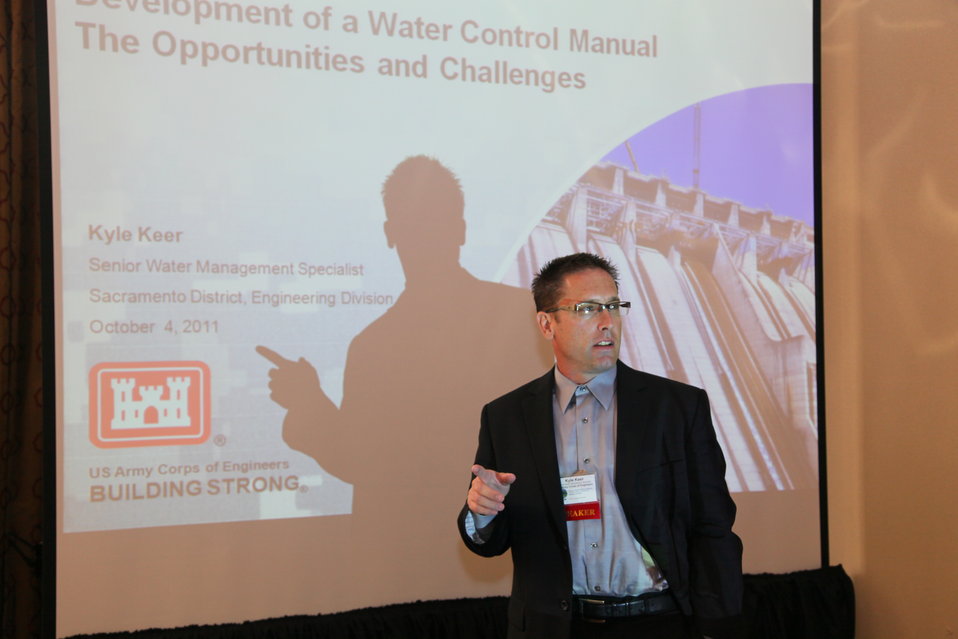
Water conference offers solutions for managing California’s complex water issues

Kyle Keer, a senior water management specialist for the U. S. Army Corps of Engineers Sacramento District, speaks about water management at the Society of American Military Engineers’ Water Conference in Sacramento, Calif., Oct. 4, 2011. The conference offered a venue for exchanging ideas and forming partnerships for dealing with complex California water issues ranging from water quality to unpredictable flooding events.